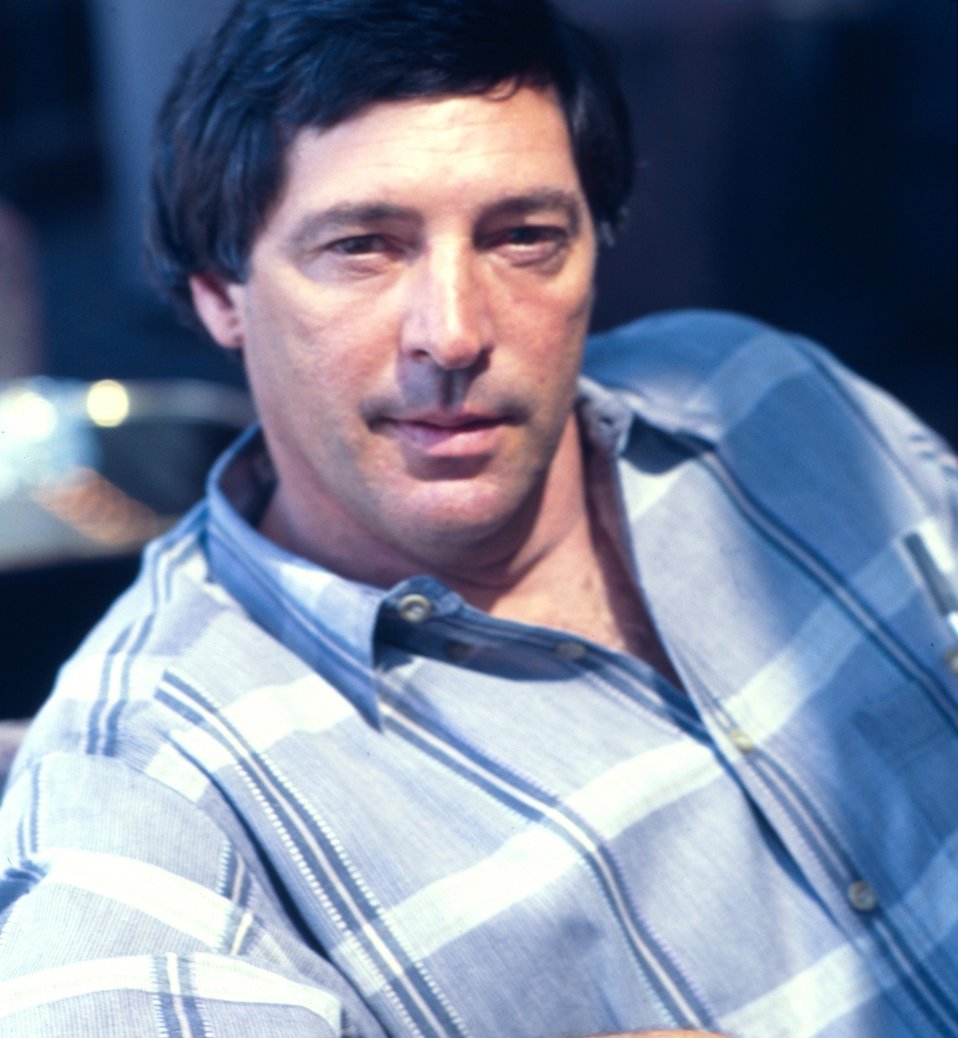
Bob Spaeth of Madeira Beach, Florida, owns and operates several longliners that fish for both sharks and reef fish in the Gulf of Mexico.